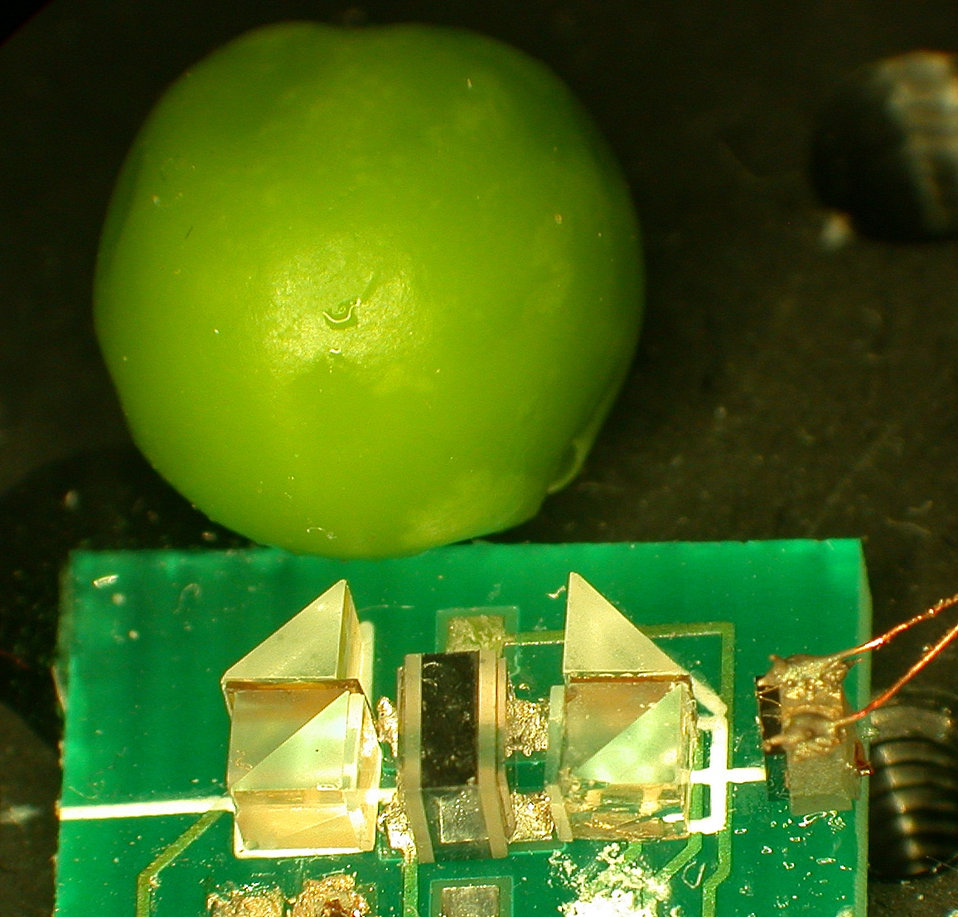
Spectrometer; Precision Laser Calibration

Photographed adjacent to an ordinary green pea, NIST's microfabricated spectrometer consists of a tiny container of atoms, a photodetector, and miniature optics.